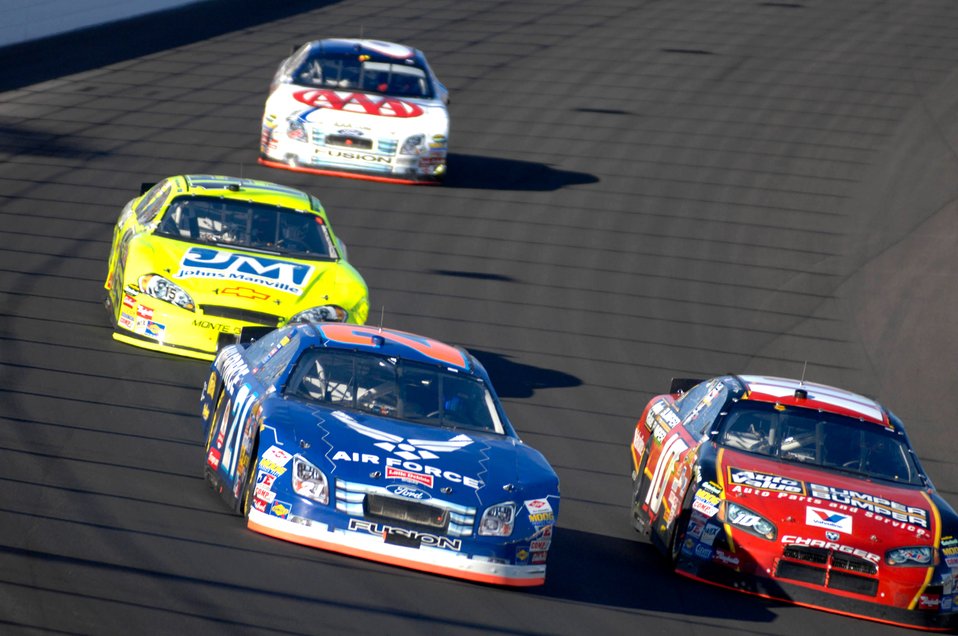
NASCAR Nextel Cup UAW Daimler-Chrysler 400

Jon Wood, driver of the U.S. Air Force sponsored Ford tries to pass Scott Riggs on the outside during the UAW Daimler-Chrysler 400 March 11 at the Las Vegas Motor Speedway.